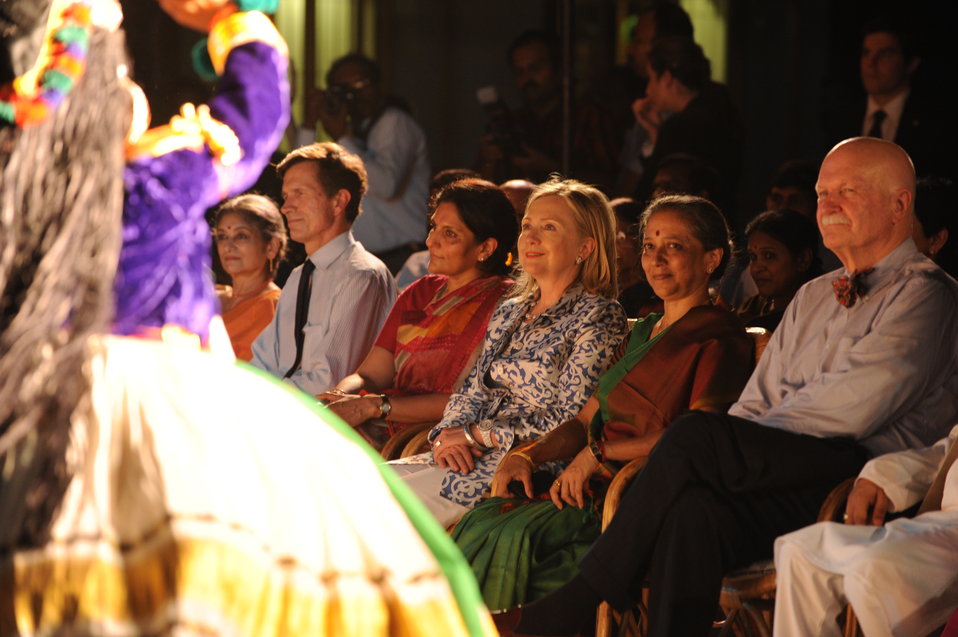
Assistant Secretary Blake, Secretary Clinton, Leela Samson, and Ambassador Burleigh Enjoy the Bharat Natyam Performance

U.S. Secretary of State Hillary Rodham Clinton, center; Assistant Secretary of State for South and Central Asian Affairs Robert Blake, far left; and Ambassador Peter Burleigh, Chargé d'Affaires of U.S. Embassy in New Delhi, India, right; enjoy a display of Bharat Natyam dance at Kalakshetra in Chennai, India, on July 20, 2011. [Paul Cohn/ State Department photo]